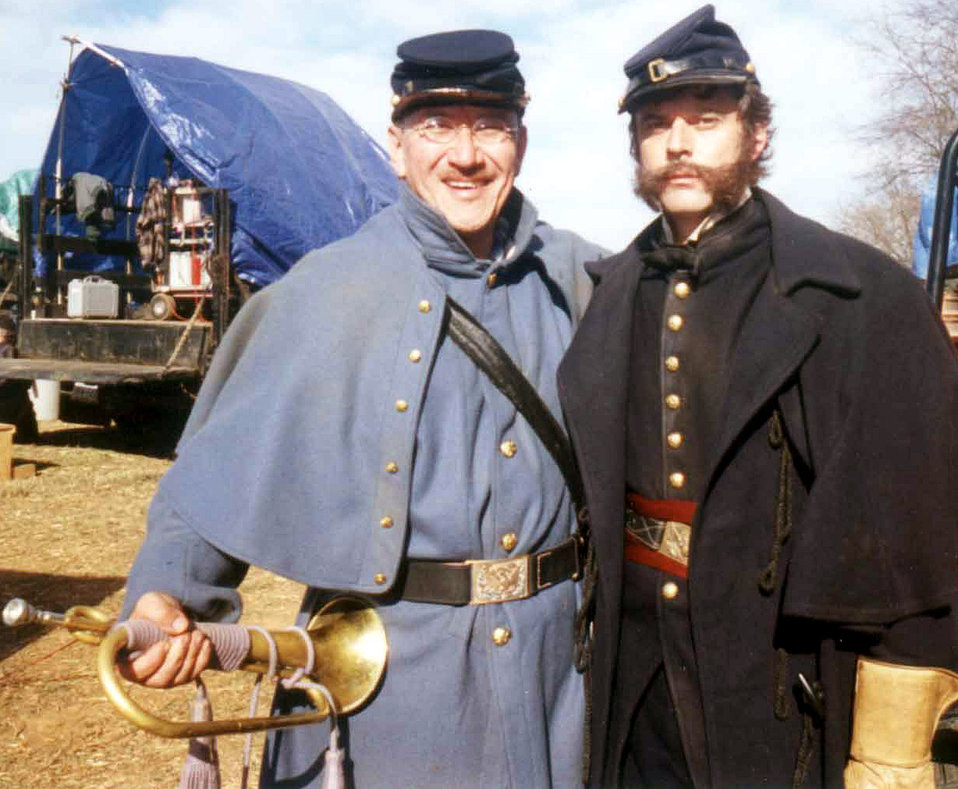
Bandsman supports 'Gods and Generals'

BOLLING AIR FORCE BASE, D.C. -- Master Sgt. Jari Villanueva of the U.S. Air Force Band (left) stands with actor C. Thomas Howell on the set of